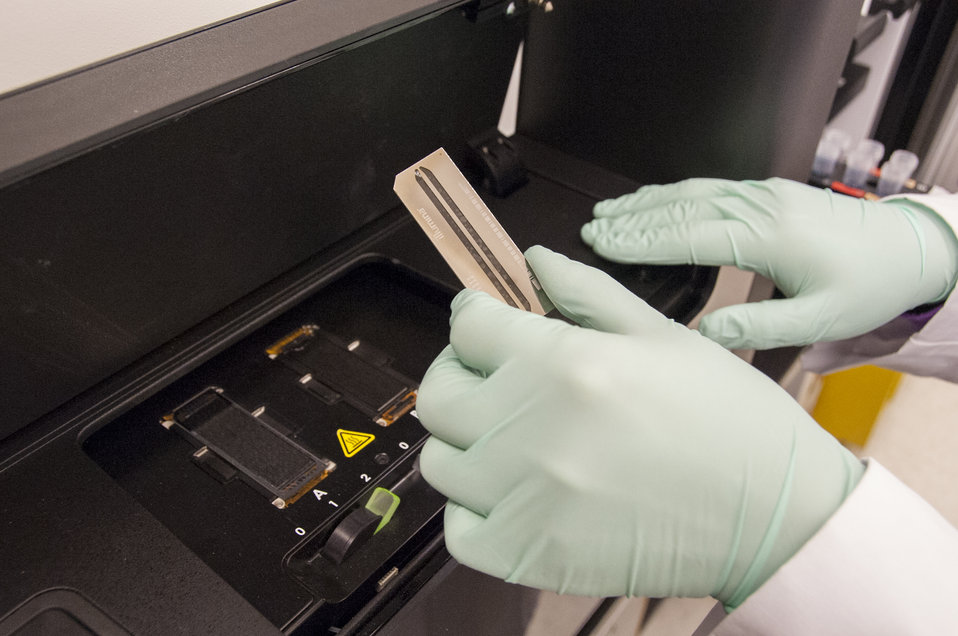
Bio Threats: FDA's A-Team (6317)

Zuben Sauna, Ph.D., principal investigator in CBER’s hemostasis laboratory, and chemist Wells Wu, Ph.D., are exploring the shapes of proteins used in medical treatments to determine why they prompt a strong reaction from the body’s immune system. Suspecting that the shapes may be part of the problem, the researchers are using tiny pieces of DNA-like molecules called aptamers to probe the proteins. Hemostasis is the process of getting bleeding to stop and the antibodies that cling to these proteins are causing life-threatening complications, particularly in the treatment of bleeding disorders.

Scientists at FDA’s Center for Biologics Evaluation and Research (CBER) work to facilitate the development of safe, effective treatments that would neutralize biological threats to public health and security. CBER regulates preventive and therapeutic vaccines, blood and blood products, human cell and tissue-based products, gene therapies and xenotransplantation. To learn more, read this FDA Consumer Update:

• FDA Teams Prepare for Biological Threats